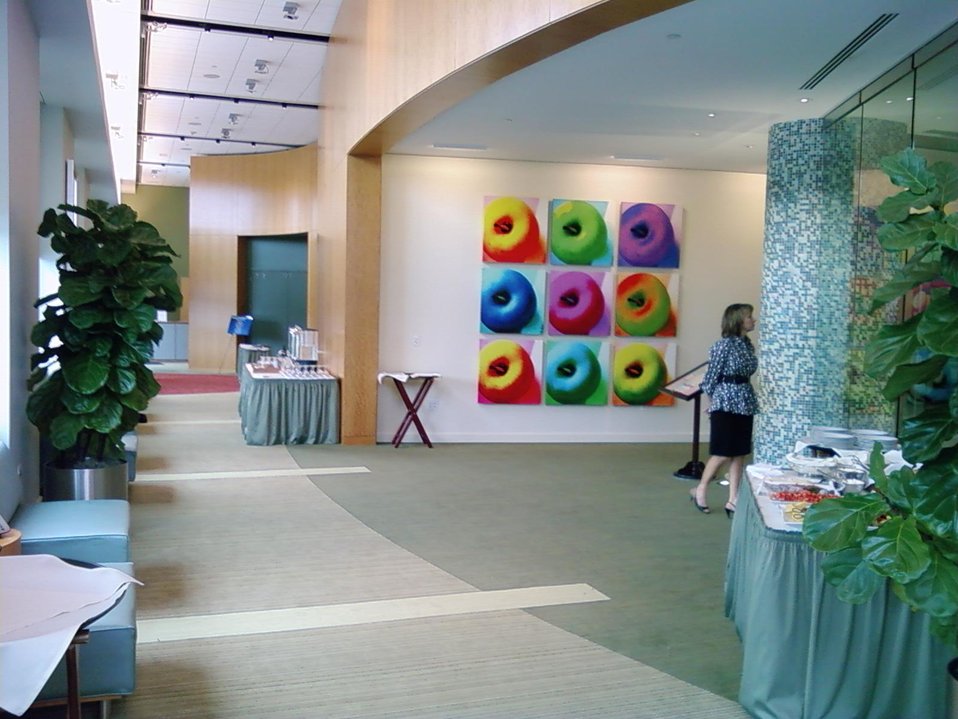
Field Hearing on Broadband Adoption 10-6-09